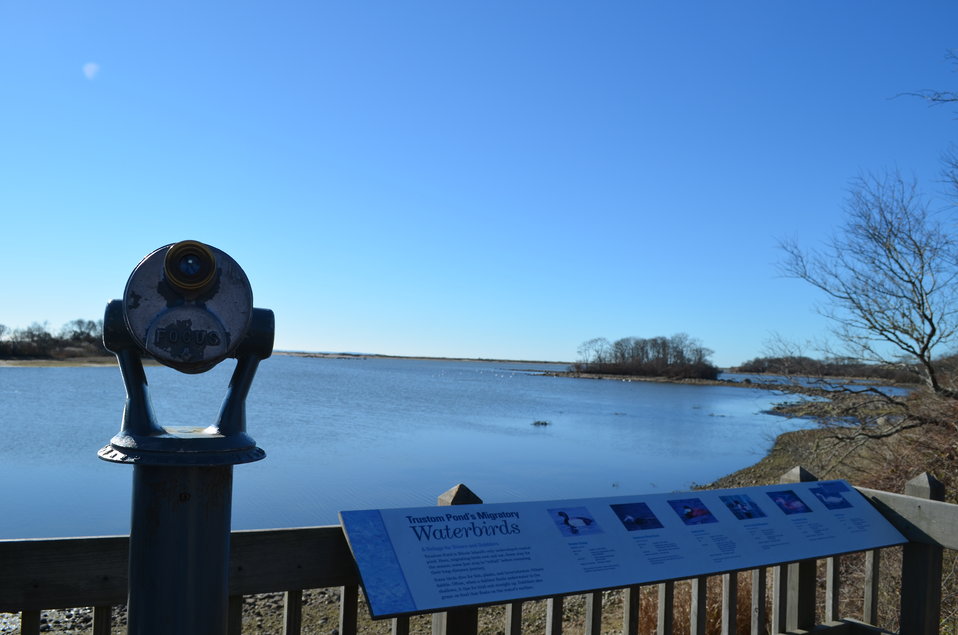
Observation deck after Hurricane Sandy (RI)

Observation deck at Trustom Pond National Wildlife Refuge shows a very different landscape compared to pre-Sandy.